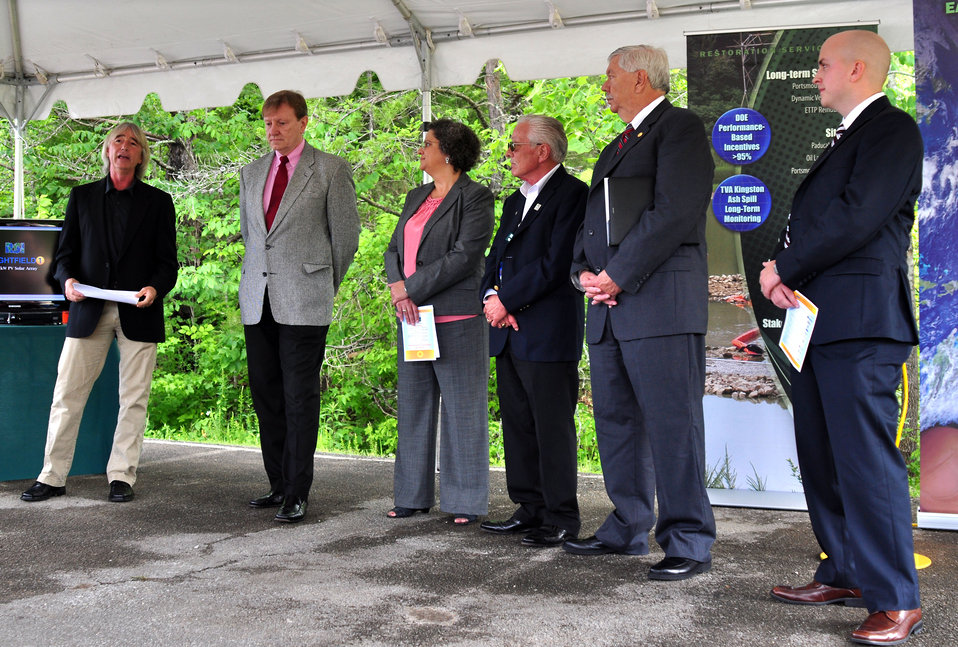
RSI Brightfield 1 solar array opening at East Tennessee Technology Park

12-086-354 DOE photo by Lynn Freeny
RSI Brightfield 1 solar array opening at East Tennessee Technology Park Oak Ridge Tennessee 5/15/2012